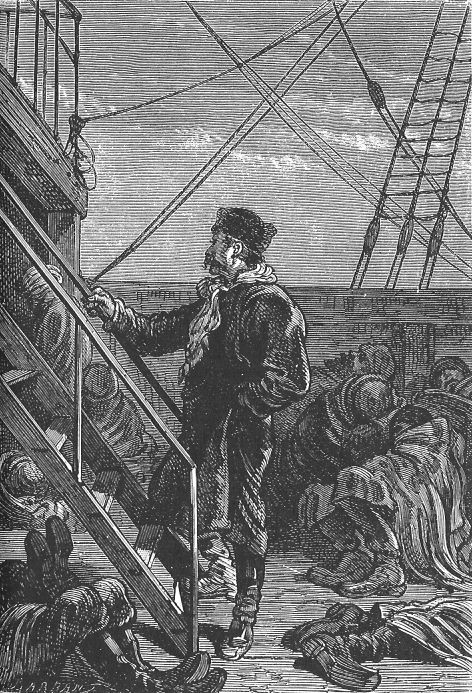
An illustration from the novel 'Michael Strogoff: The Courier of the Czar' by Jules Verne drawn by Jules Férat. Polski: Ilustracja powieści Juliusza Verne'a 'Michał Strogow, kurier carski' autorstwa Julesa Férata. Français : 'Michel Strogoff. Le courier du tzar', Jules Férat. Français : Il montait l’échelle du gaillard d’avant.